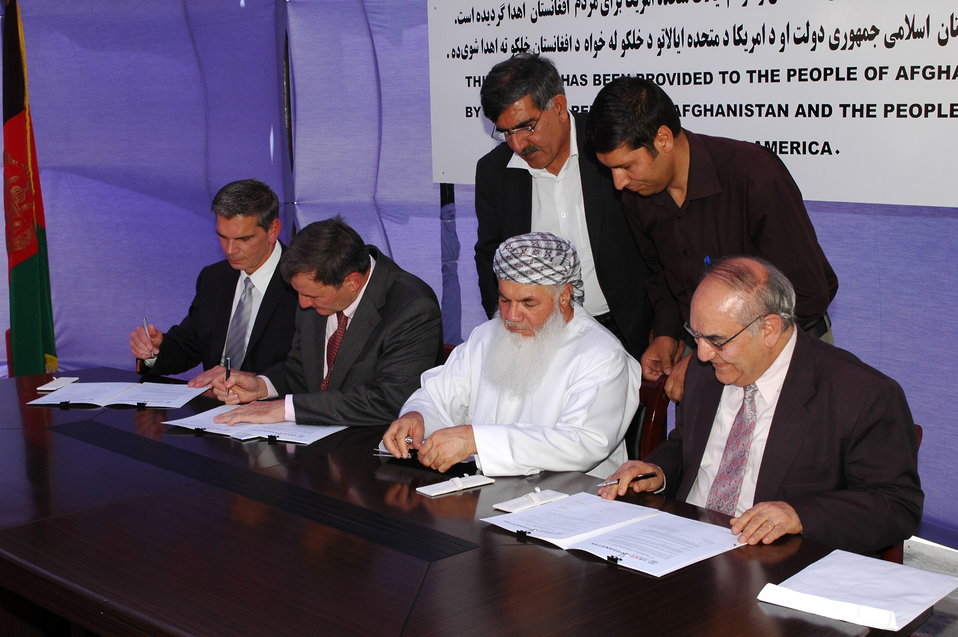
105 MW Tarakhil Power Plant Handover